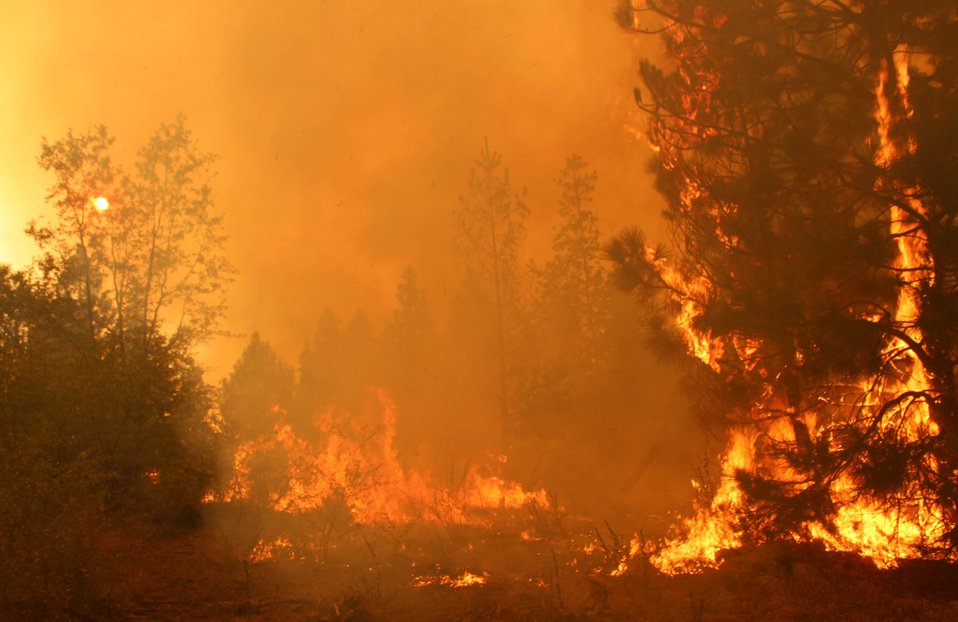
The Rim Fire in the Stanislaus National Forest near in California began on Aug. 17, 2013 and is under investigation. The fire has consumed approximately 253,332 acres and is 80% contained.